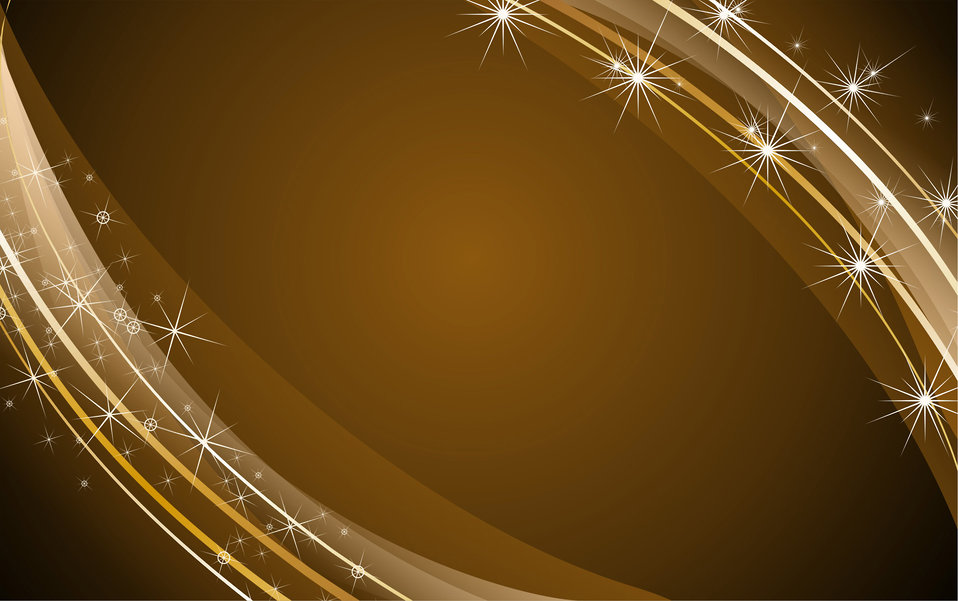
Abstract background

Vector abstract background with lines and sparkles.